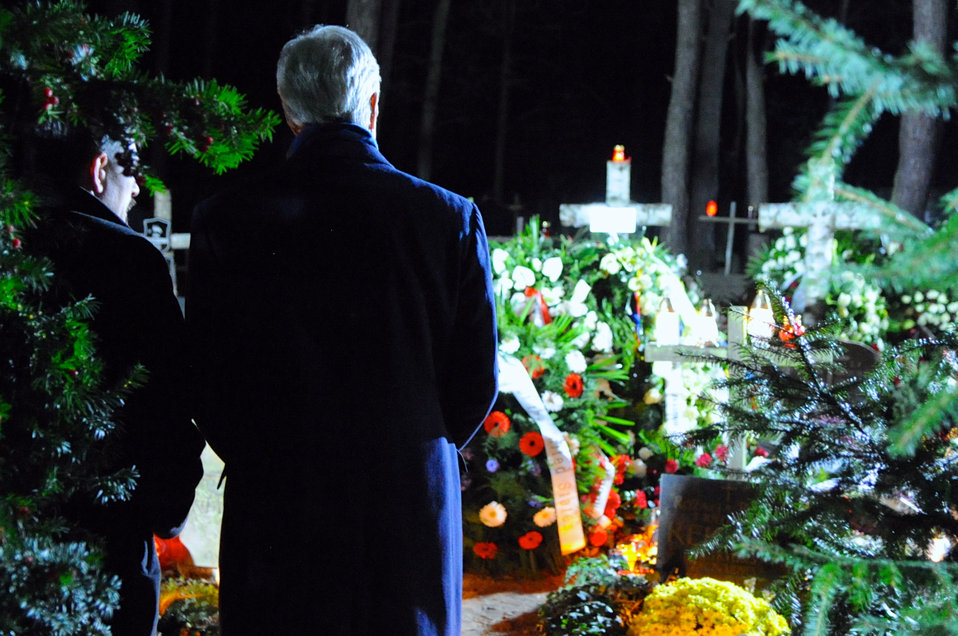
Secretary Kerry and Son of Former Polish Prime Minister Mazowiecki Pay Respects at the Father's Gravesite

U.S. Secretary of State John Kerry chats with Michal Mazowiecki, the son of former Polish Prime Minister Tadeusz Mazowiecki, after paying his respects at the father's gravesite in Laski Cemetery outside Warsaw, Poland, on November 4, 2013.